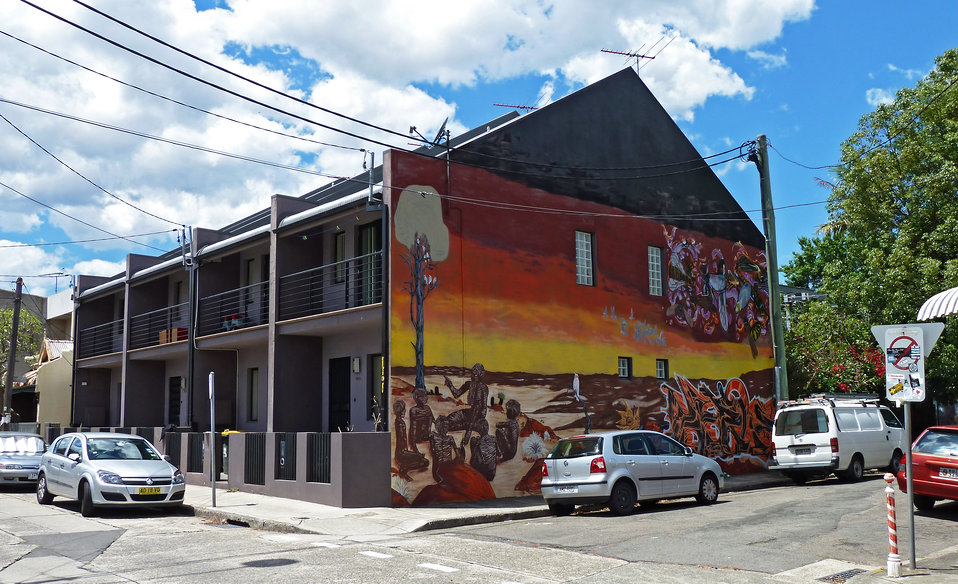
100–102 Lord Street, Newtown, New South Wales, Australia.